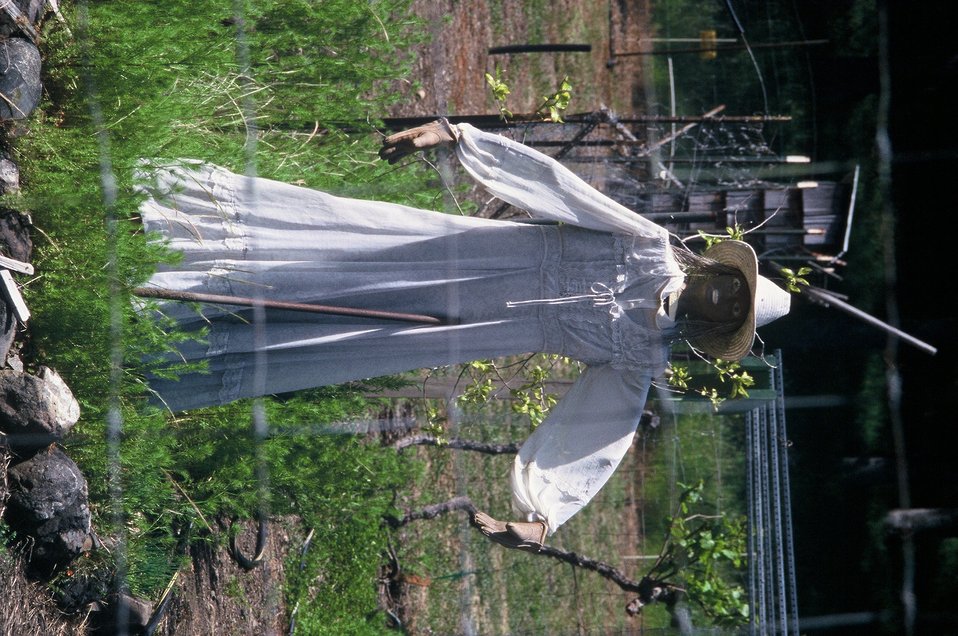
Wild section of the Rogue River from Grave Creek to Foster Bar May 19 to May 22.